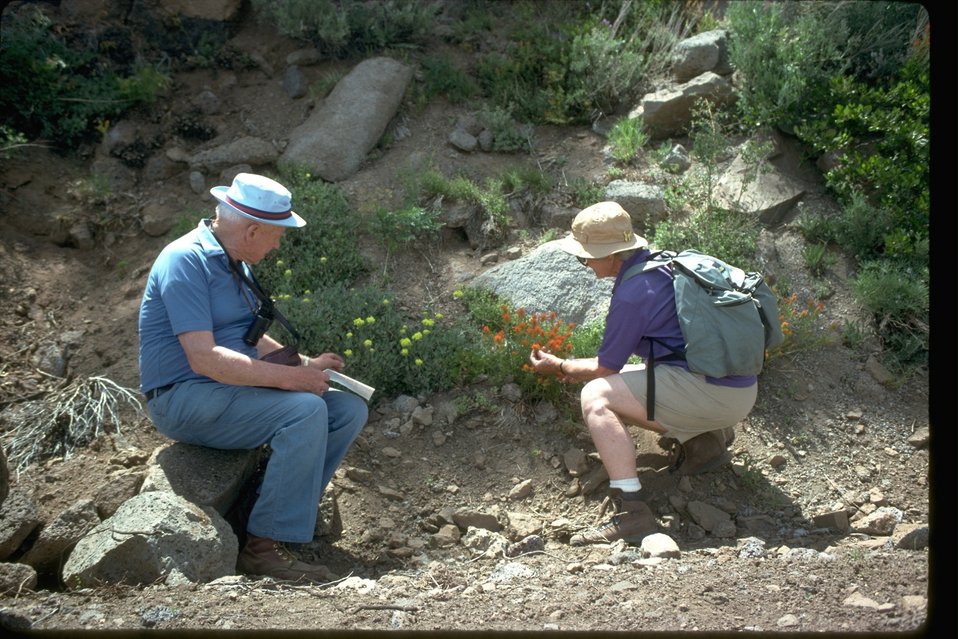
Botanizing" at Steens Mountain in Southeastern Oregon.